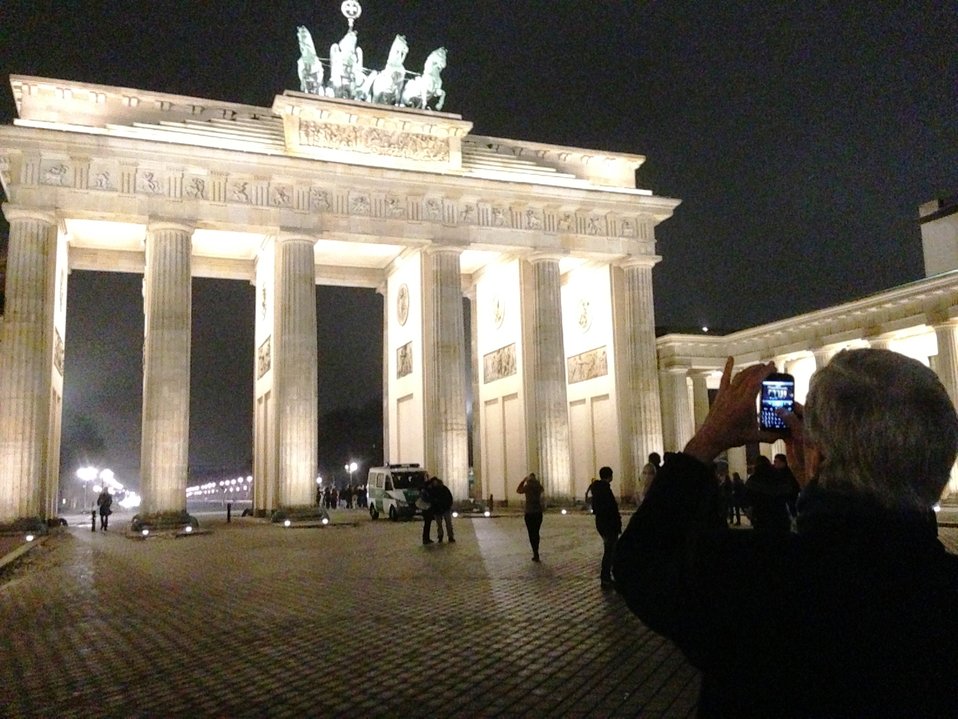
Secretary Kerry at the Brandenburg Gate

U.S. Secretary of State John Kerry takes a photo from his cell phone of the Brandenburg Gate in Berlin, Germany, February 25, 2013.